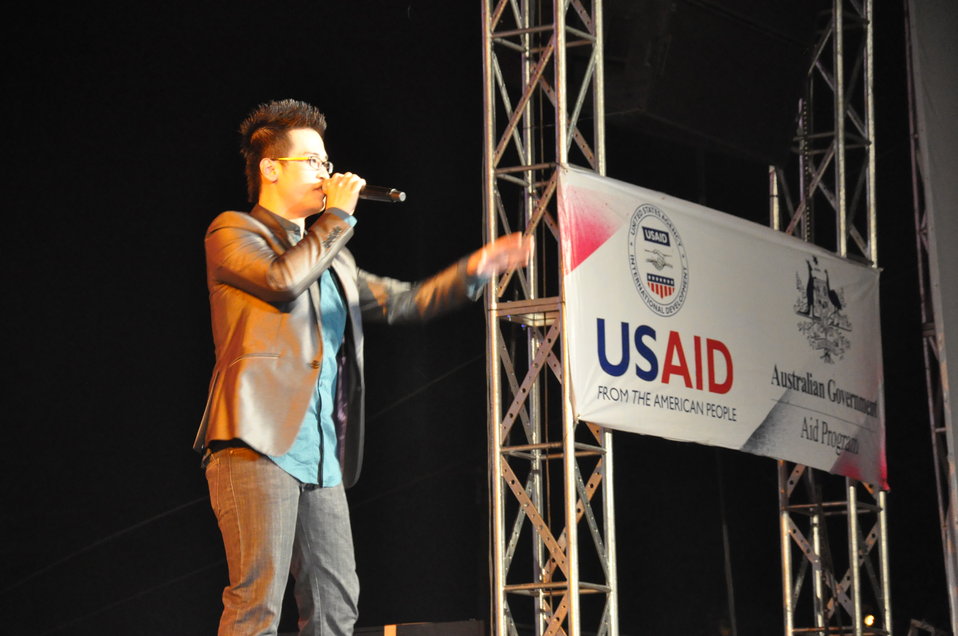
USAID and MTVEXIT concert in Can Tho

Concert in Can Tho against human trafficking, April 10, 2010